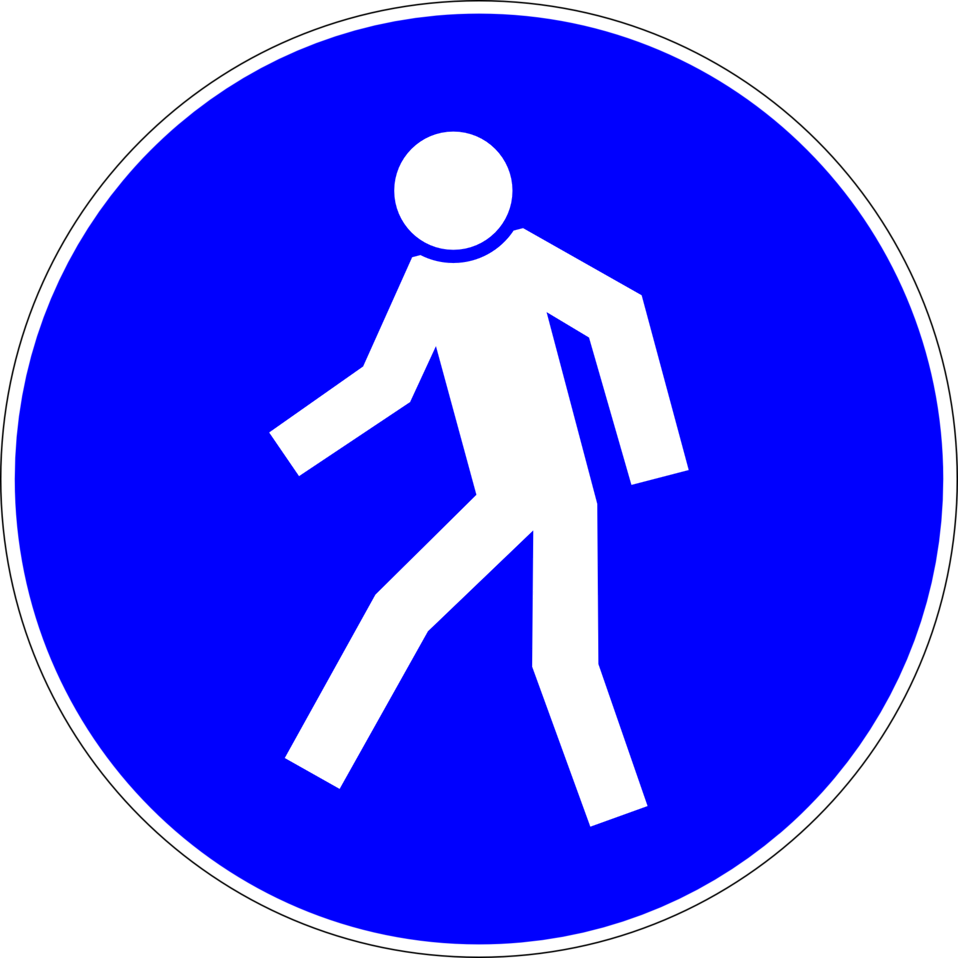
Deutsch: Für Fußgänger, Gebotszeichen D-M010 nach DIN 4844-2